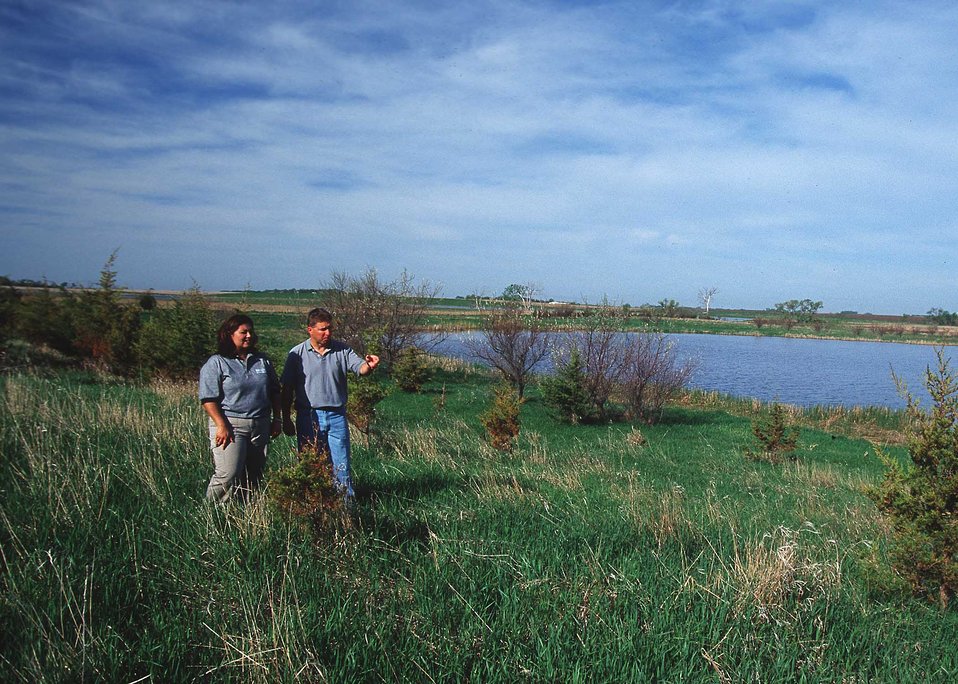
NRCS conservationist working with a landowner on wildlife habitat upland management adjacent to a wetland area in eastern South Dakota.